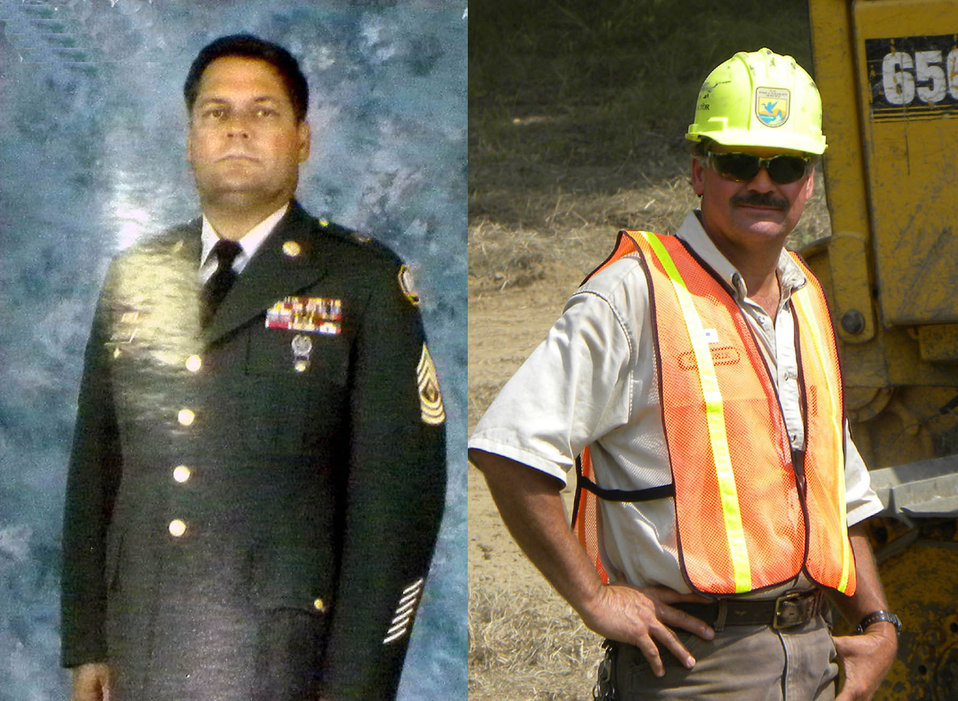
Don Brevielle

DON JOSEPH BREVELLE.
Don J Brevelle joined the Louisiana Army National Guard while a senior in high school in 1980. After graduating from high school he attended basic training as a heavy equipment operator. After returning from basic training he then was qualified as an electrician and then as a Nuclear, Biological & Chemical noncommissioned officer. In 1990, as part of the 527th Engineer Battalion (Combat Heavy), Don was activated for Operation Desert Storm. He served as a squad leader of the Heavy Equipment Platoon. After returning from Desert Storm, he worked his way up thru the ranks of Platoon Sergeant (E-7) and then the unit First Sergeant (E-8). In 2002, Don retired with 22 years of service. .
For the past 23 years, Don has been employed by the U.S. Fish & Wildlife Service as an Engineer Equipment Operator at Lake Ophelia National Wildlife Refuge in Louisiana. He is also a Heavy Equipment Safety Instructor and an ATV/UTV Safety Instructor.